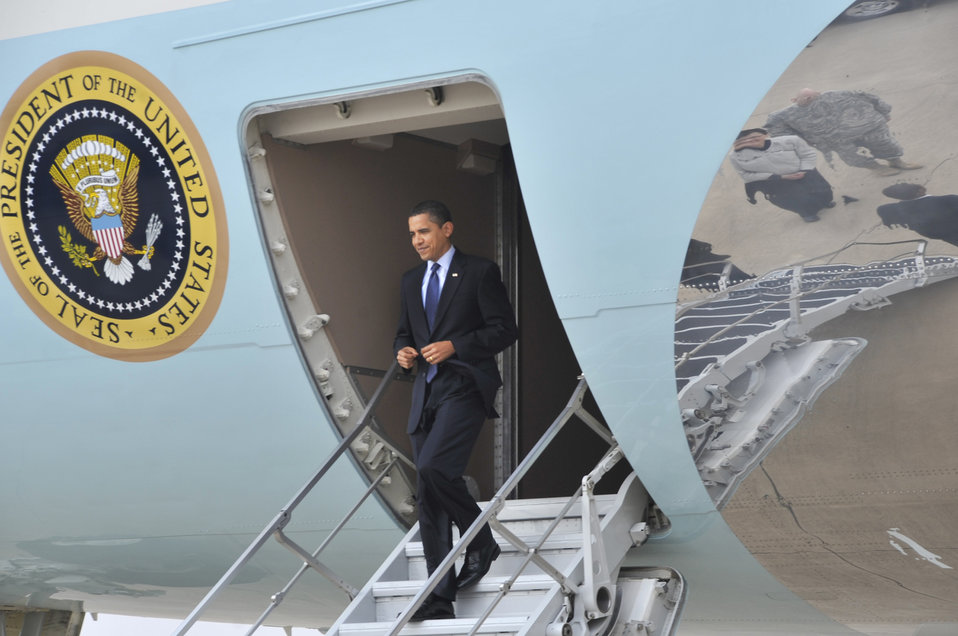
President Obama visits Sather

President Barack Obama arrives for an unannounced April 7 visit to Sather Air Base, Iraq. Shortly after arriving, the president addressed a crowd of nearly 1,500 servicemembers, government civilians and contractors at Al Faw Palace at Camp Victory, Iraq. During his speech, the president commended servicemembers for their focus and dedication and promised them his support while in office. The visit marked the president's first trip to Iraq since taking office.